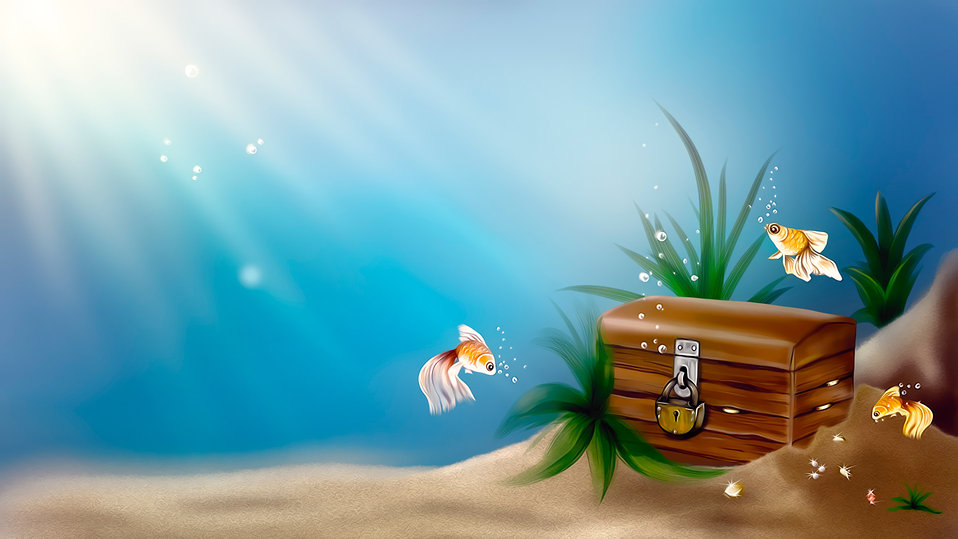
Underwater treasures.

Digital art wallpapers.